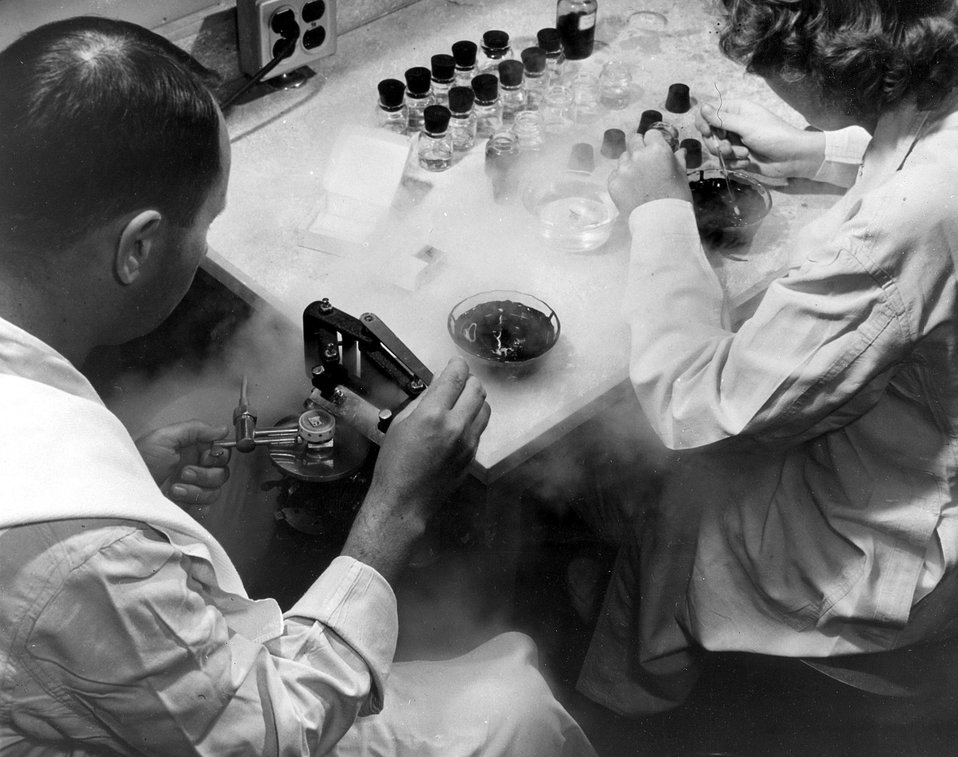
Standard equipment in many pathology laboratories includes a freezing microtome, such as this one. c. 1954